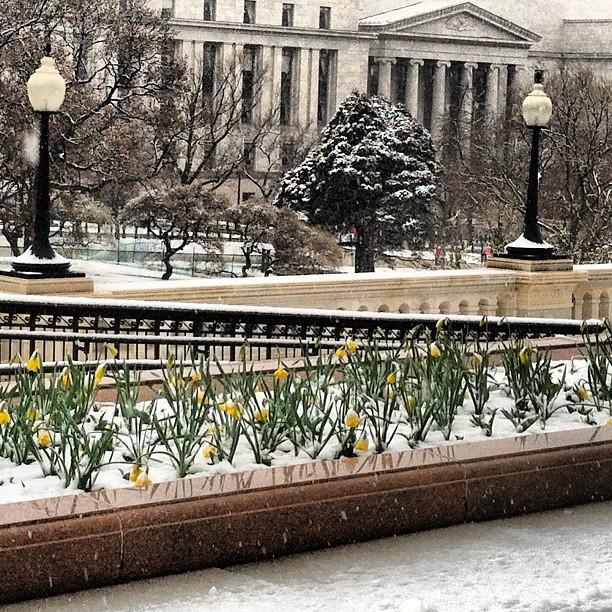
View of Rayburn Building from Capitol March 25, 2013

Snow falls at the Capitol as daffodils bloom on the terrace in a late March storm.